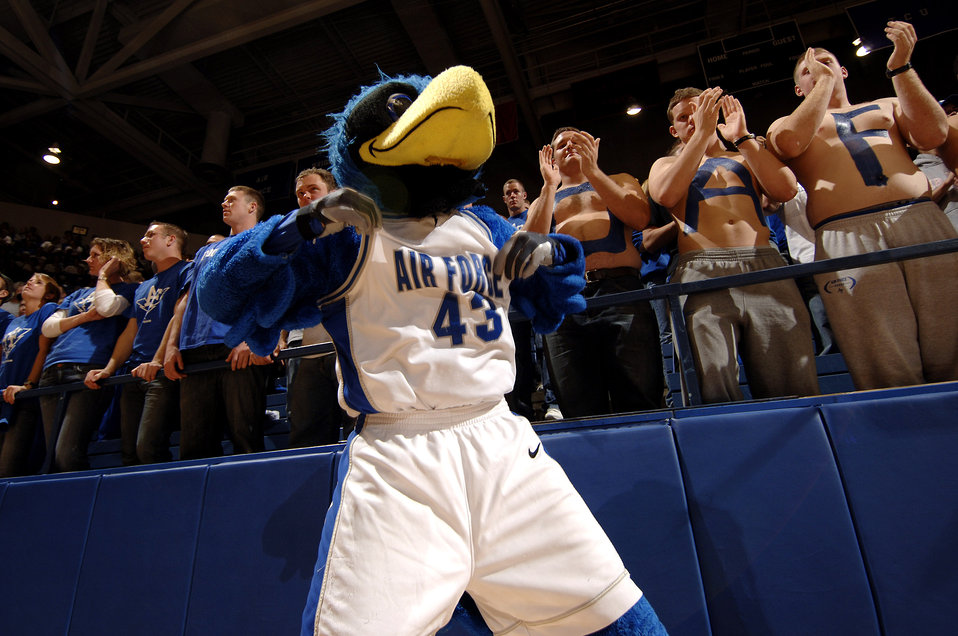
Falcons score overtime victory

The Air Force Falcons' mascot, The Bird, leads the Section 8 crowd to cheer as Air Force defeated the Radford Highlanders 52-47 in overtime Nov. 19 at Clune Arena. Air Force, under first-year coach Jeff Reynolds, is 4-0 on the season.